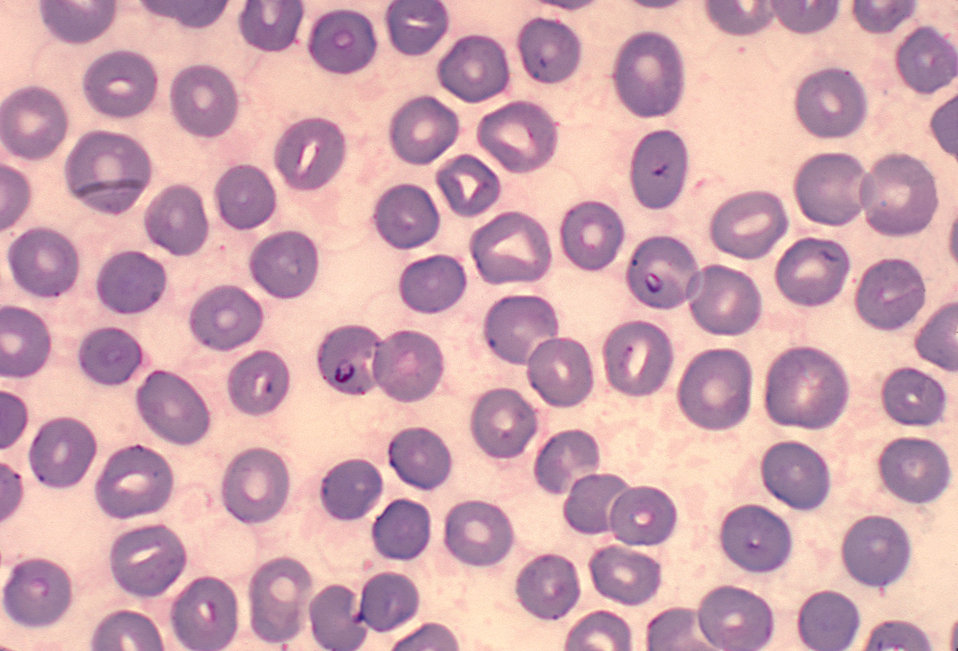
Babesia microti in blood smear. Giemsa stain. Parasite.